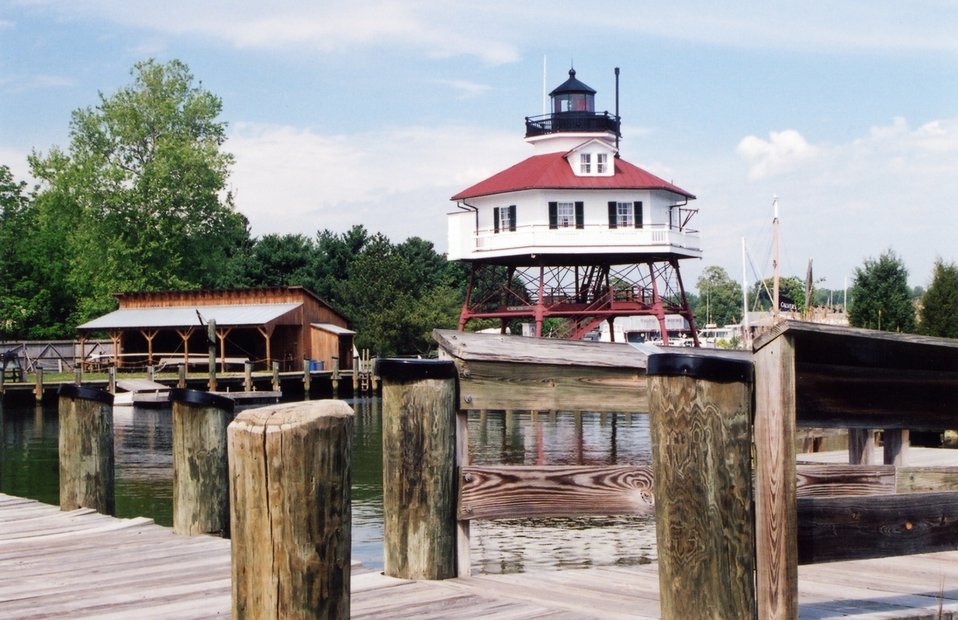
Drum Point Lighthouse at the Calvert Marine Museum.